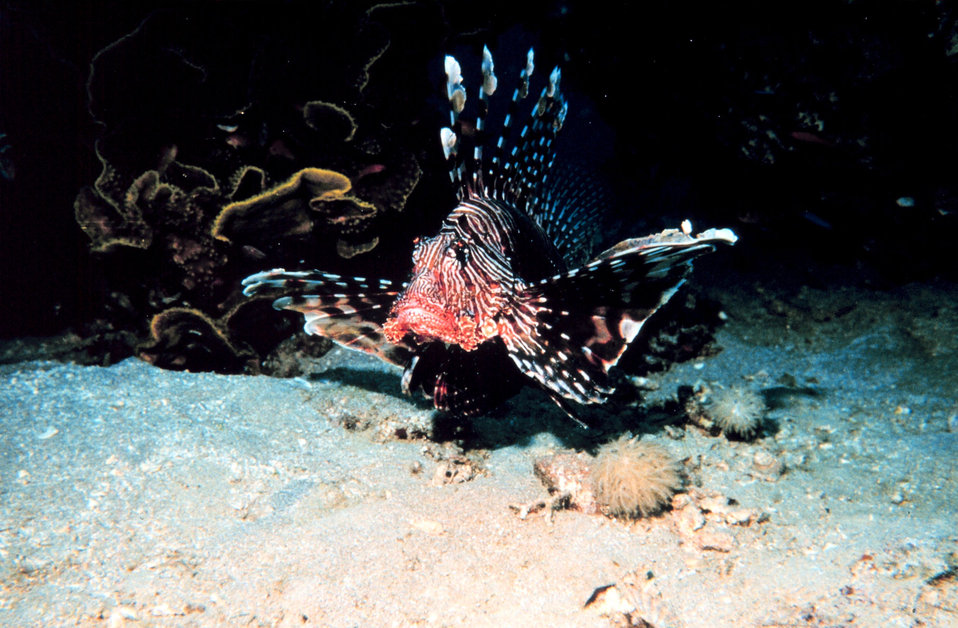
Volitan lionfish - Pterois volitans